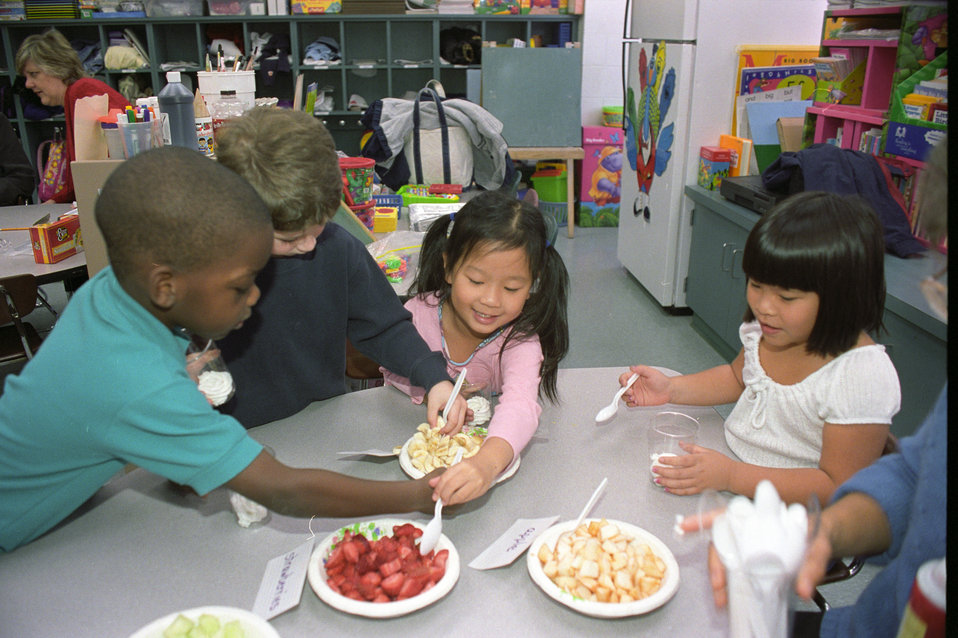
Students in West Palm Beach, Florida sample fresh fruit that is made available to schools under the auspices of the U.S. Department of Agriculture (USDA) Food Nutrition Service (FNS) on January 24, 2003.